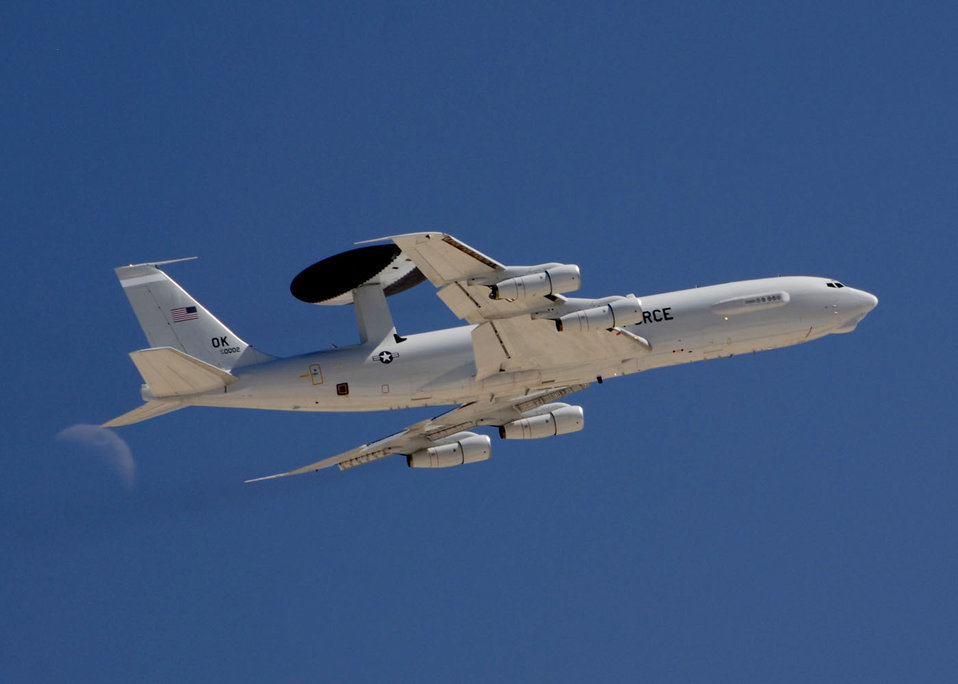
104th Fighter Wing comes to Red Flag

An E-3 Sentry AWACS aircraft takes off from Nellis Air Force Base, Nev., Aug. 25 while participating in a Red Flag exercise. Red Flag offers pilots and ground crews training in actual wartime scenarios to increase their combat skills.